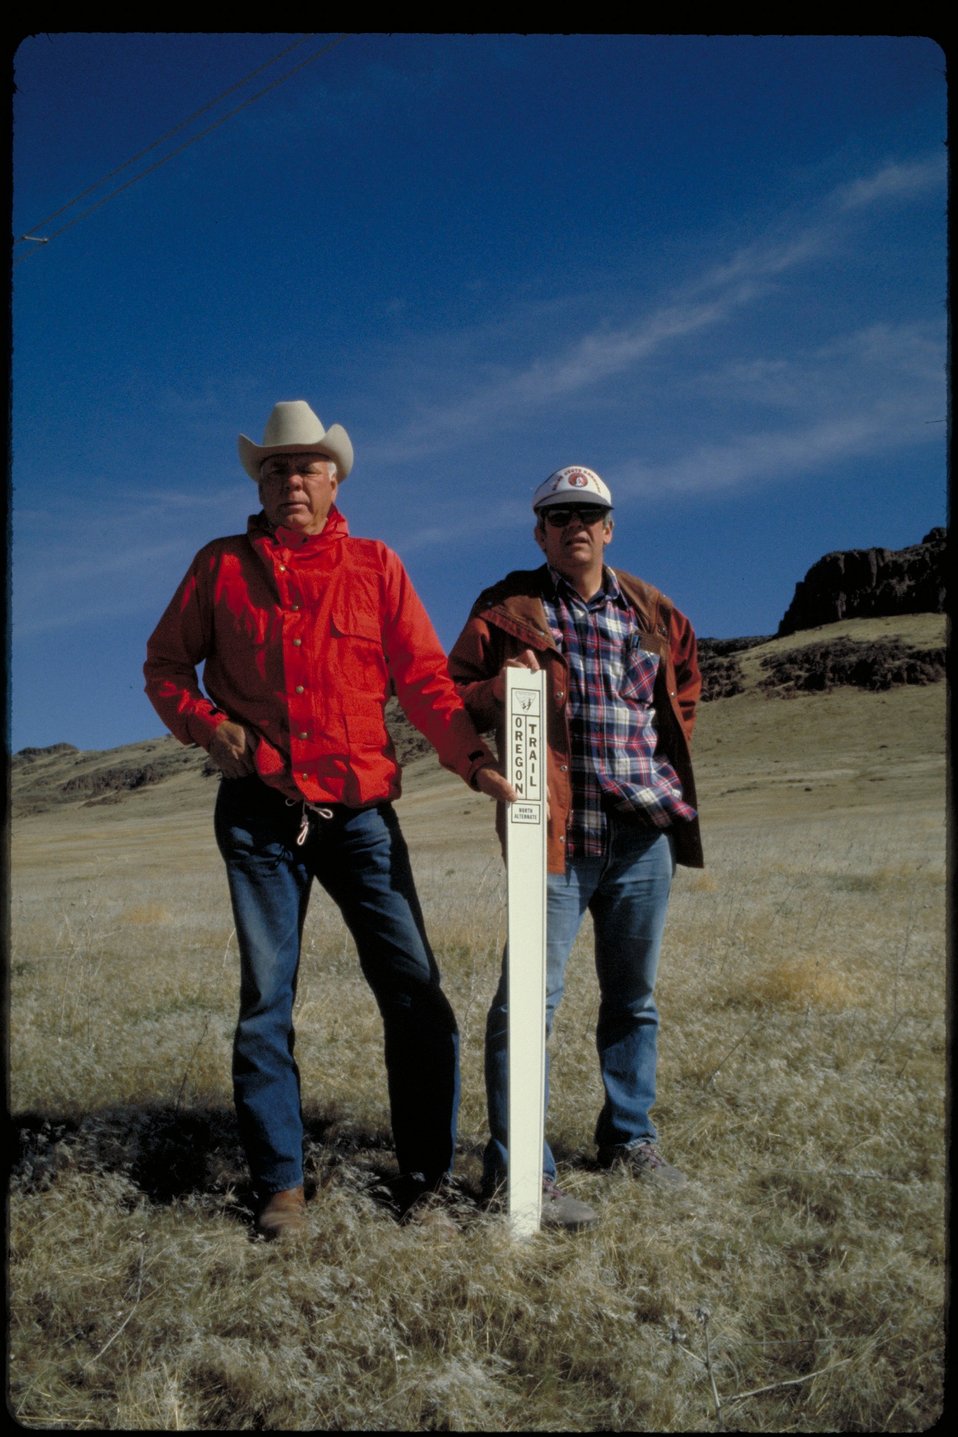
Oregon Trail Southeast of Teapot Dome Lower Snake River District